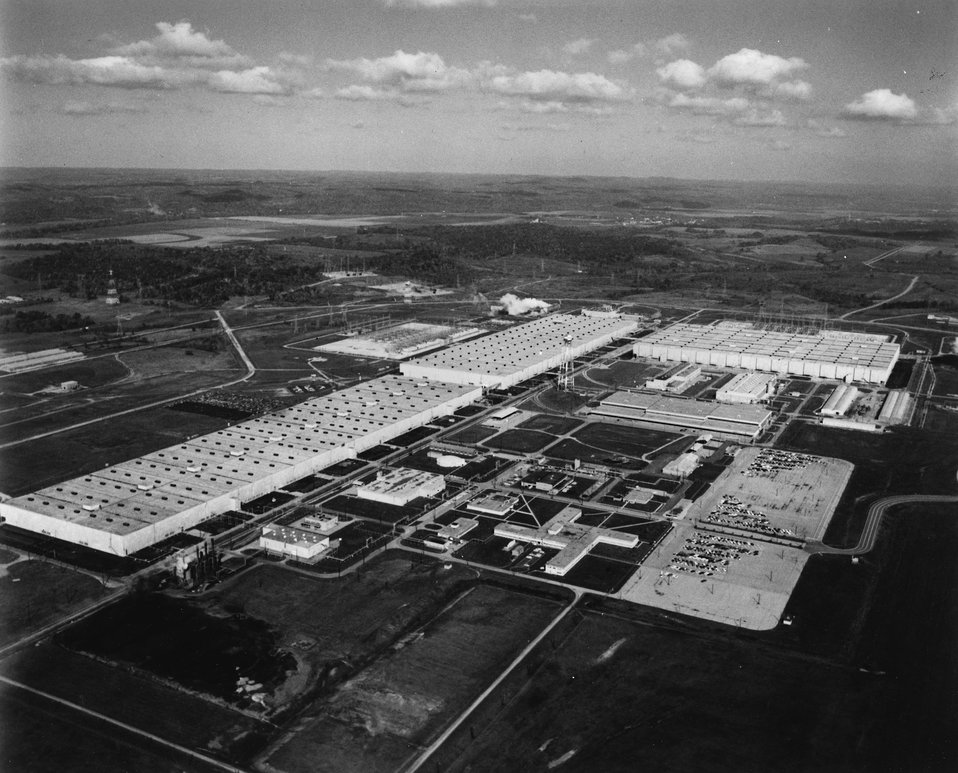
The Portsmouth Gaseous Diffusion Plant, for the separation of U-235, is located in Pike County, Ohio, about 20 miles north of Portsmouth. The Energy Research and Development Administration's operating contractor at the plant is Goodyear Atomic Corporation, a subsidiary of Goodyear Tire and Rubber Company. c. 1971